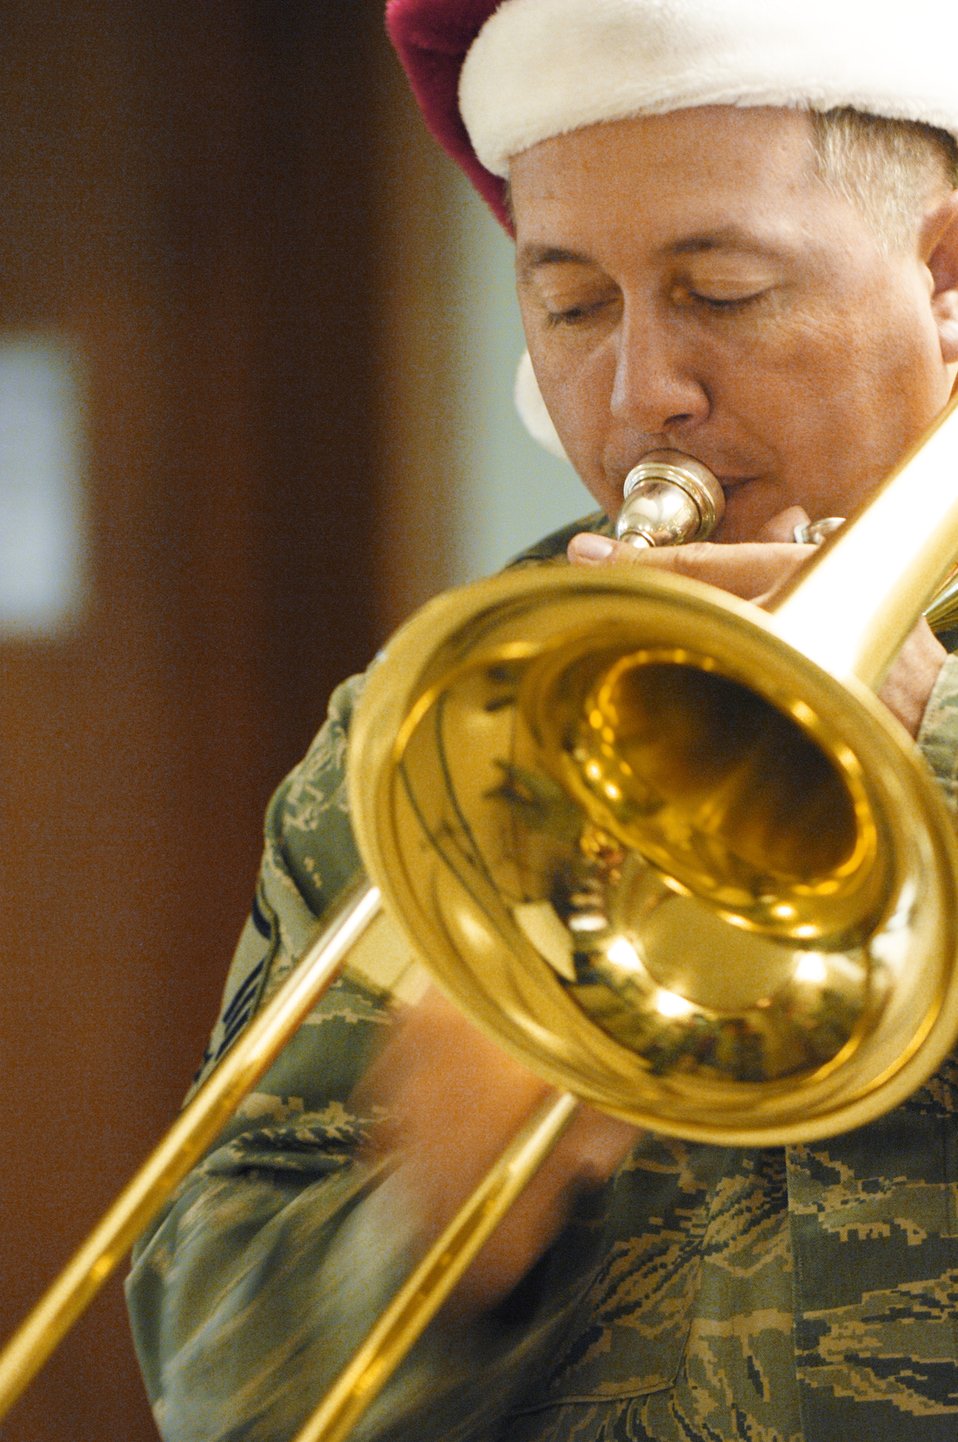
Joy to the world

Master Sgt. Matthew Baloun plays Christmas carols at the 30th Space Wing headquarters Dec. 17, 2009, at Vandenberg Air Force Base, Calif. The band also toured main base and played holiday music to members of Vandenberg.